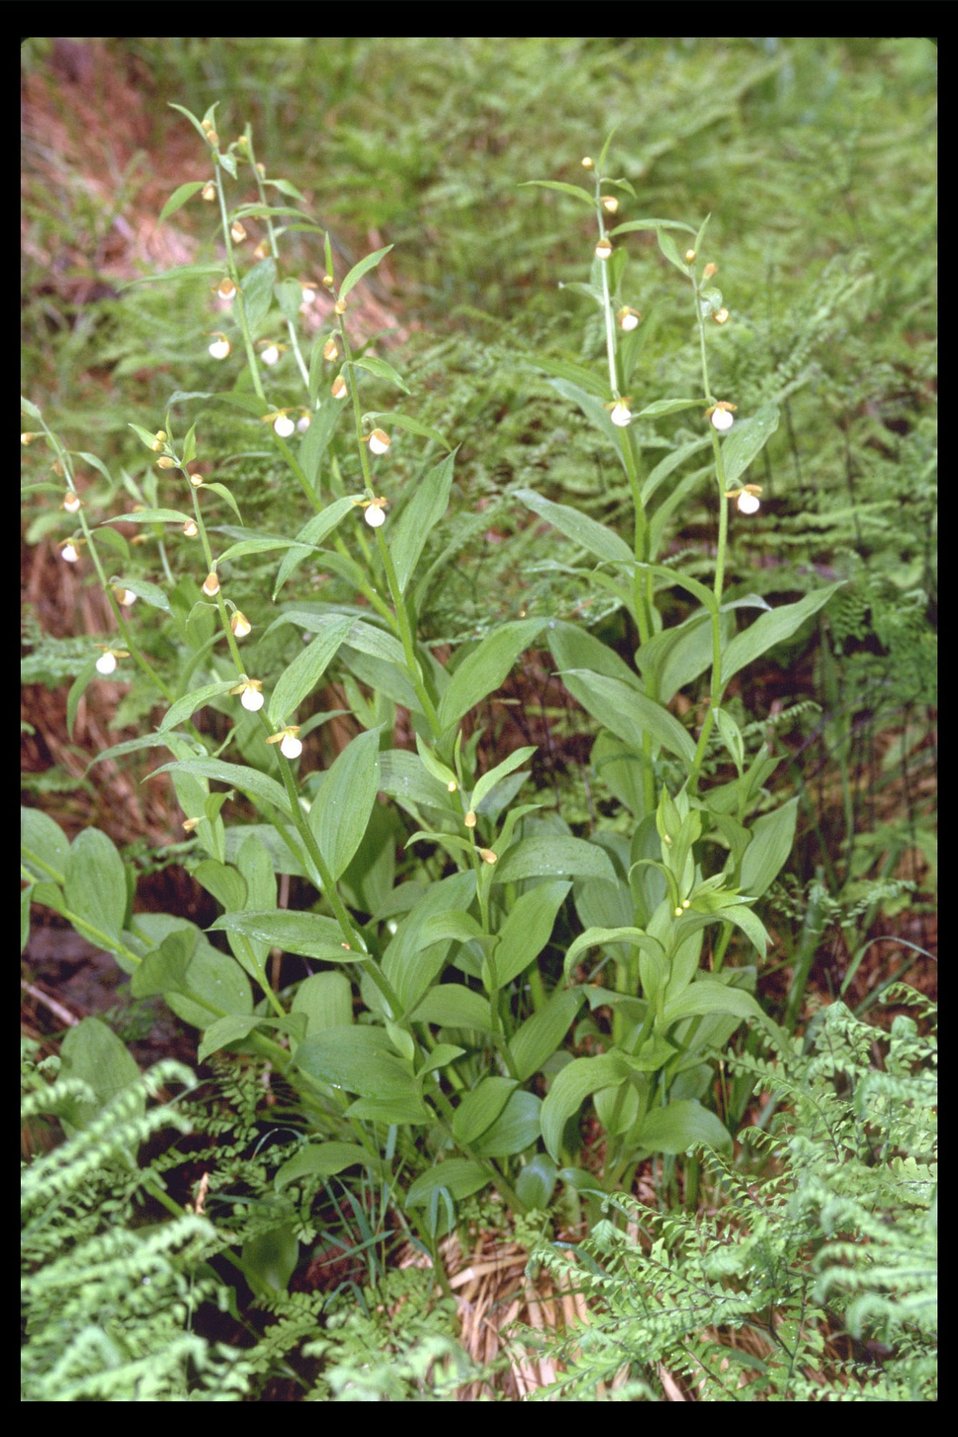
California Lady's Slipper Orchid (Cypripedium californicum) near Goolaway Gap.